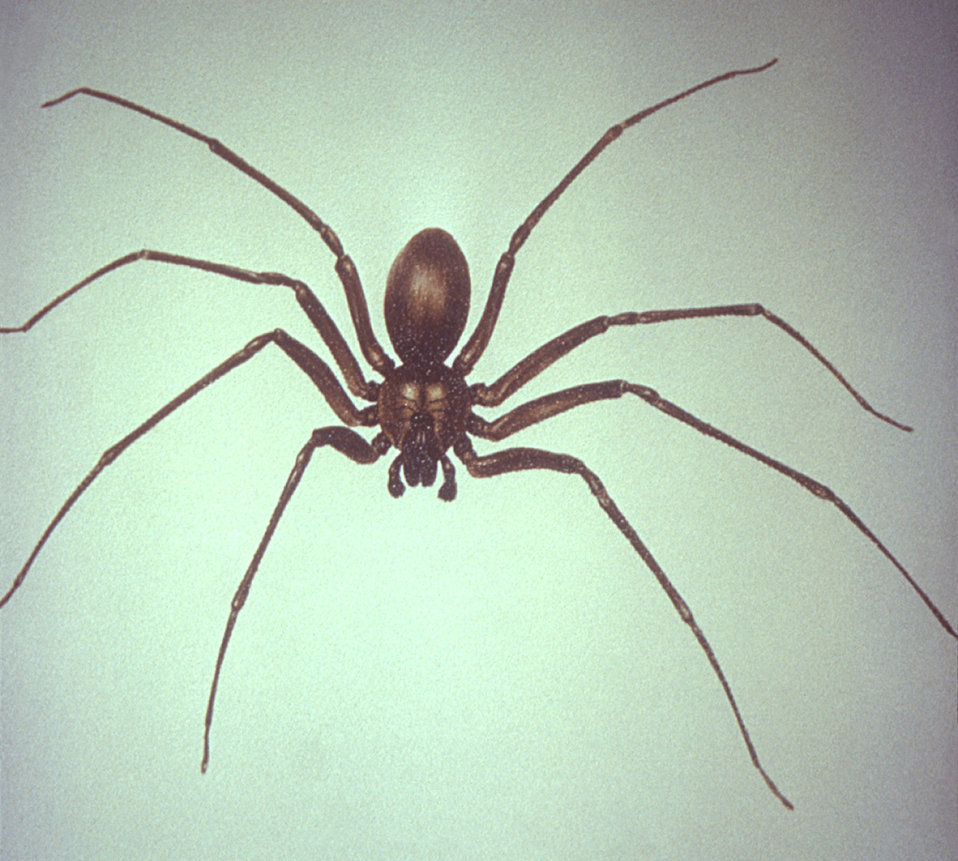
This is a dorsal view of a brown recluse spider, Loxosceles reclusa, able to inflict a highly venomous bite.